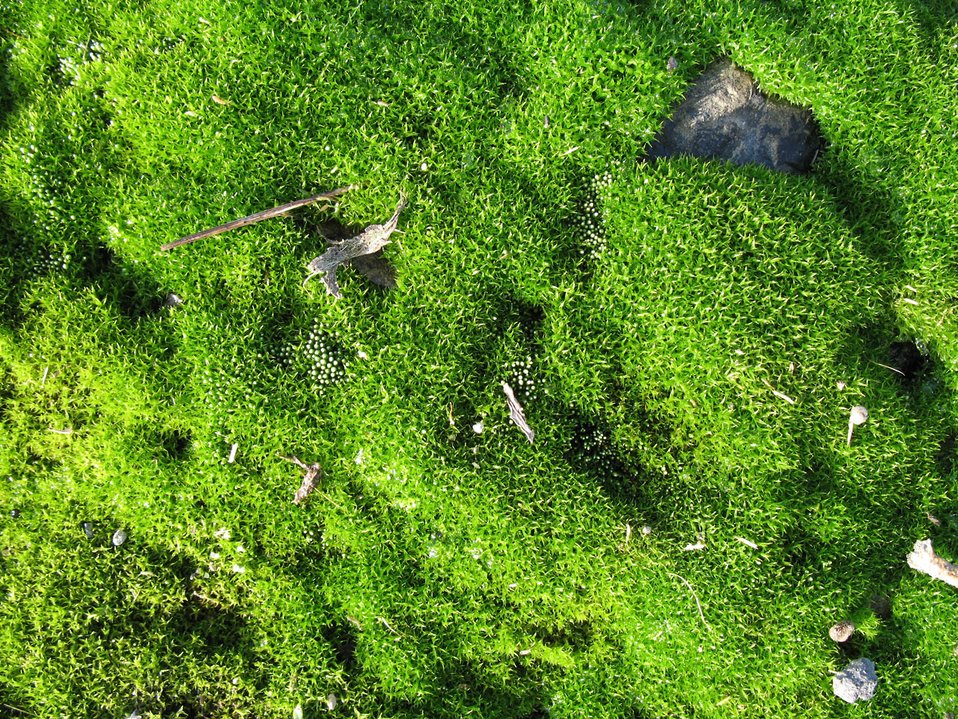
Moss

Detailed photo of green moss.